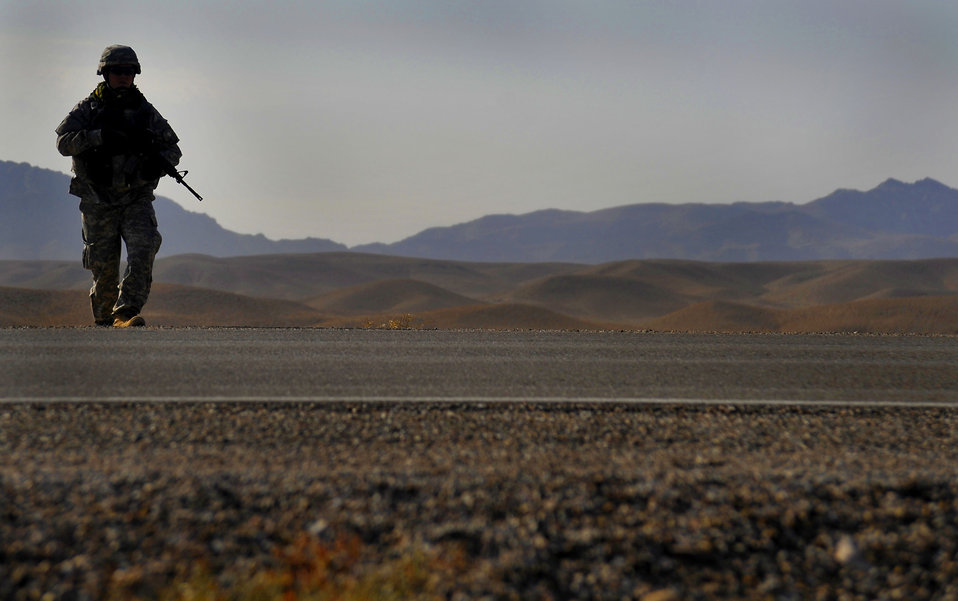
Air Force engineers help keep Afghan roads safe for travel

Tech. Sgt. Joseph Kapinos helps provide security during a mission with servicemembers from Provincial Reconstruction Team Zabul Oct. 23, 2009, in Zabul Province, Afghanistan. The mission is in support of Air Force civil engineers inspecting the integrity of bridges, bypasses and other construction projects along Highway One in Zabul Province. Sergeant Kapinos is a U.S. Air Forces Central combat camera combat correspondent.